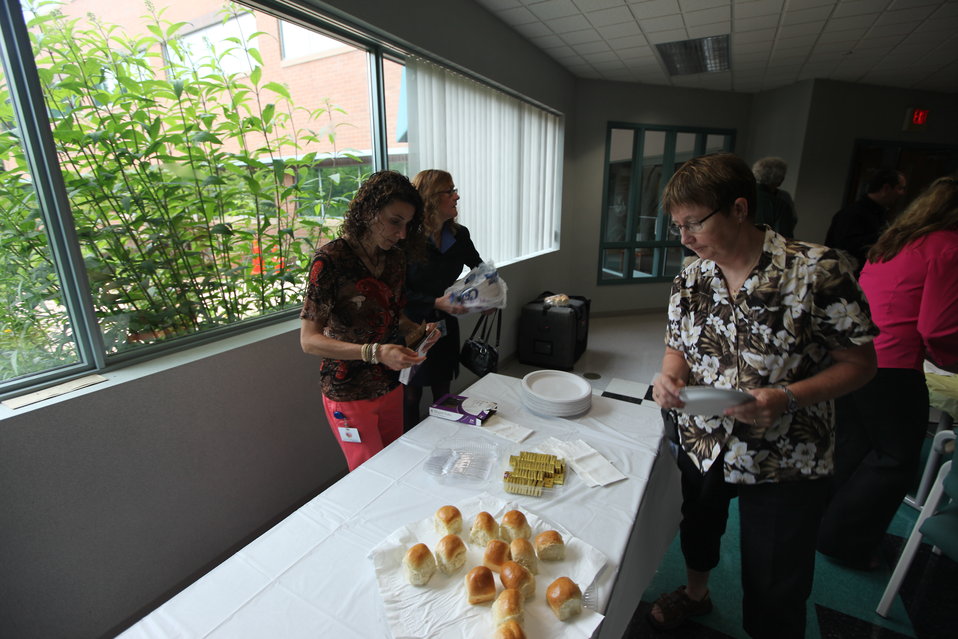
Northeast Region Employee Appreciation Awards

Luncheon